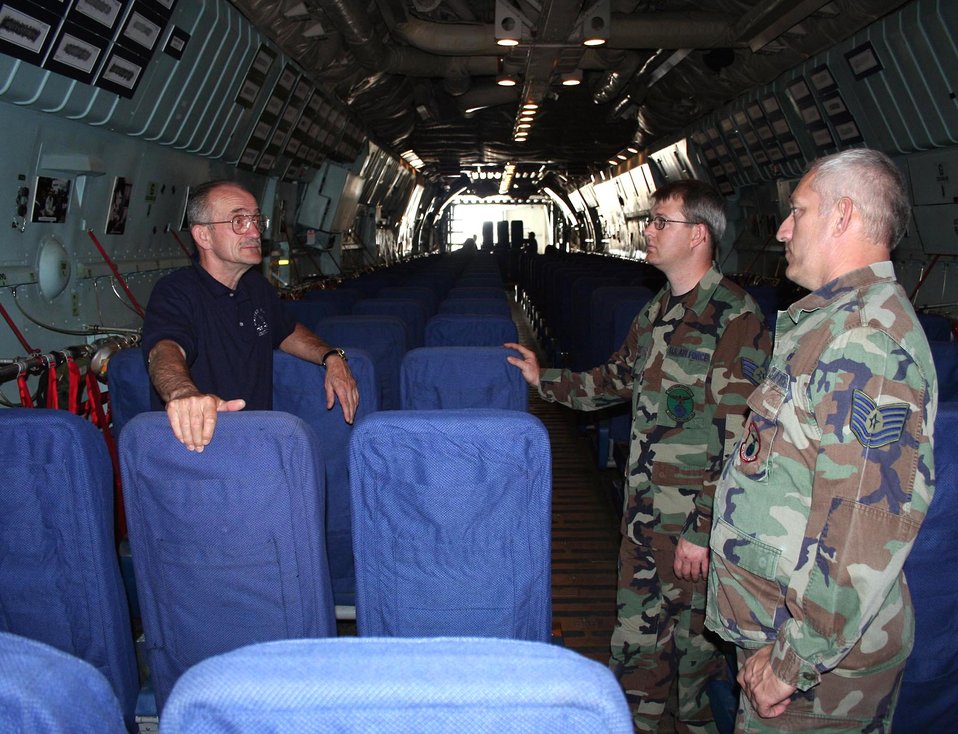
Former POWs relive freedom flights

Retired Maj. Gen. Edward J. Mechenbier talks about the maintenance of the